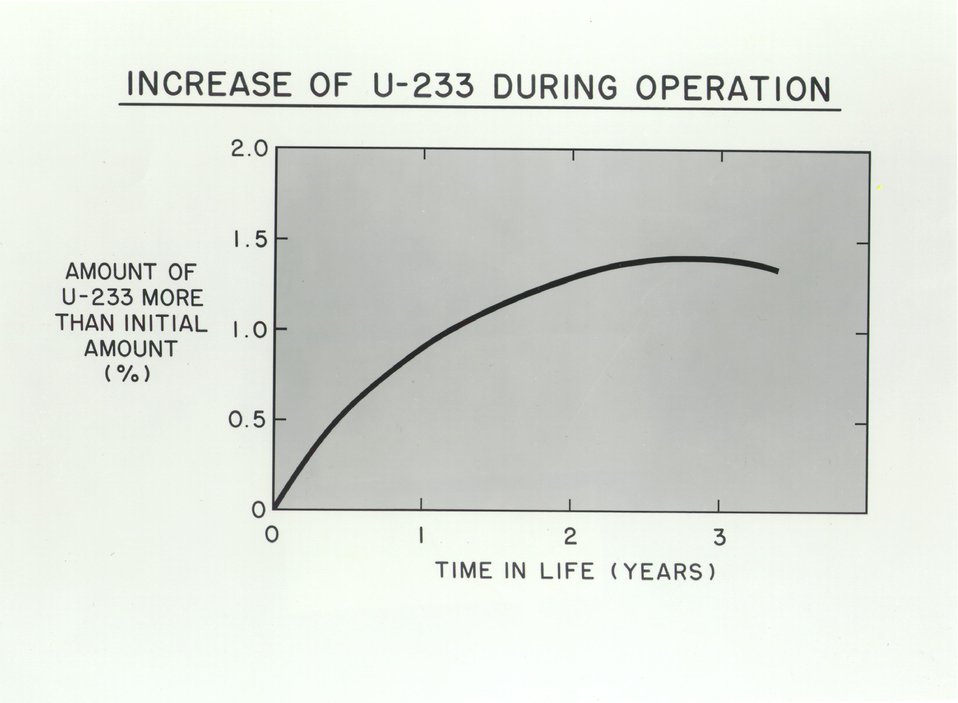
Increase of U-233 during operation of LWBR at Shippingport over amount at beginning. c. undated